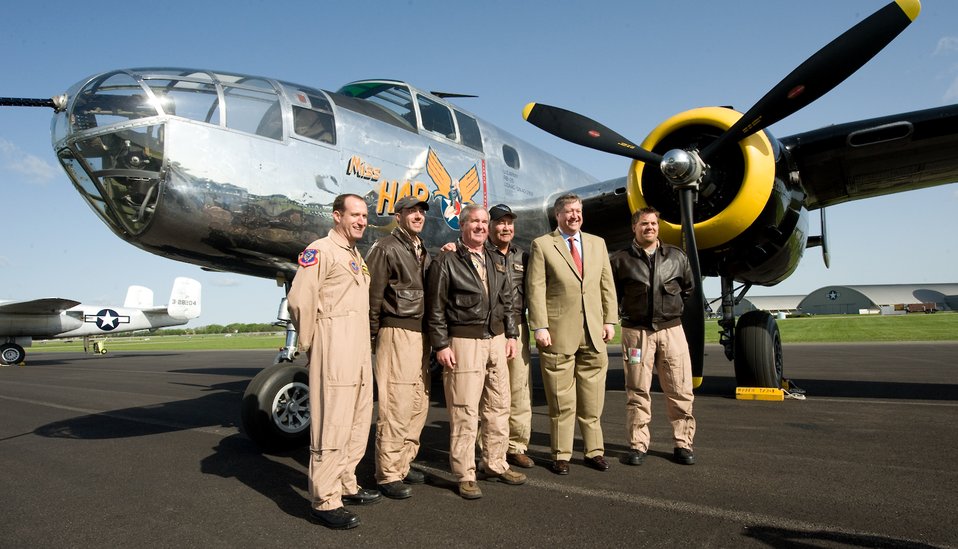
Mass B-25 Arrival

Secretary of the U.S. Air Force, Michael Donley poses for a photo with the crew of B-25A